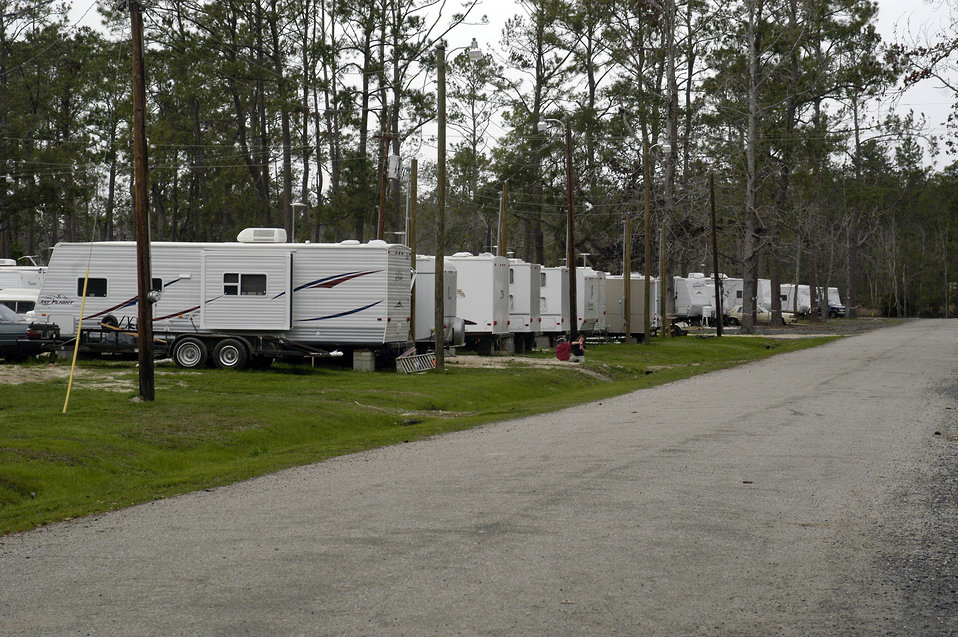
Hurricane Katrina left thousands of people homeless in the New Orleans, LA. Trailers were given to homeowners in New Orleans, LA, as temporary shelters provided by the Federal Emergency Management Agency (FEMA). Hurricane Katrina was the 6th strongest hurricane in U.S. history and the 5th deadliest. Katrina made landfall on Monday morning, August 29, 2005 as a Category 3 hurricane with sustained winds of 125 mph with over a 20-foot storm surge. Katrina caused catastrophic damage over 90 thousand square miles across Louisiana with an estimated $75 billion dollars in damage. The total economic impact to the Gulf Coast was estimated at over $150 billion. 80% of New Orleans, LA, was underwater with some areas more than 20 feet deep. Less than a month later southern Louisiana was struck by a second Category 3 hurricane Rita inflicting more damage in the southwestern areas of Louisiana adding an addition $12 billion worth of damage to the already beleaguered state. The U.S. Army Corps of Engineers (USACE) under the auspices of FEMA was the lead service in providing assistance to the citizens of Louisiana. The U.S. Department of Agriculture (USDA) supplied emergency food aid, emergency loan assistance to farmers and home owners, and USDA personnel from around the nation volunteered their time and muscle to aid in the recovery operations.